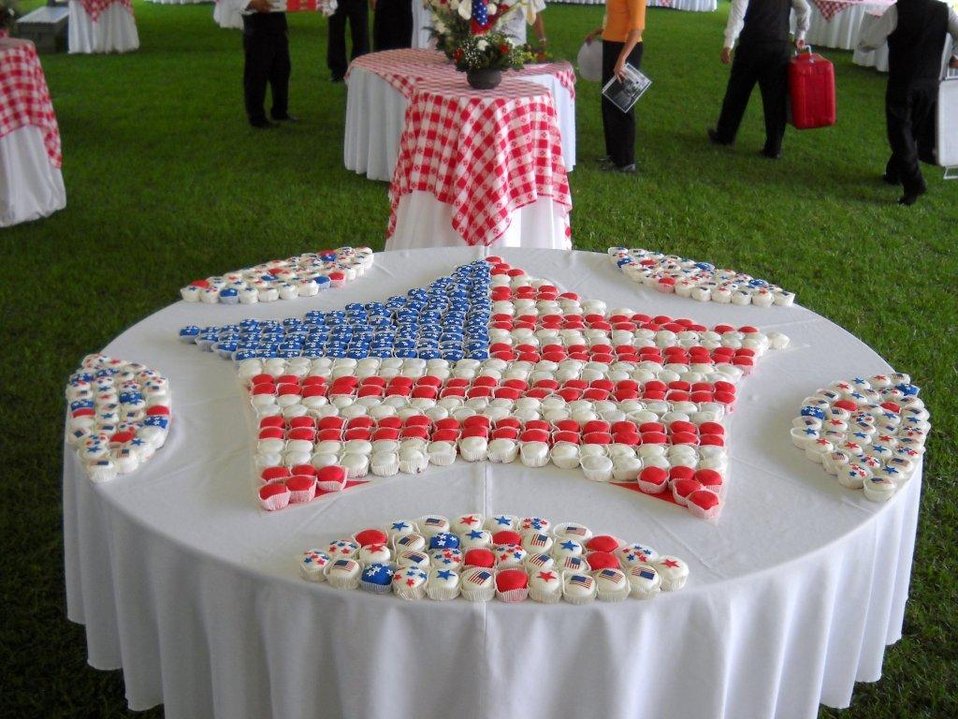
July 4th Celebration at U.S. Embassy in Guatemala

Cupcakes are decorated red, white, and blue for the U.S. Independence Day celebration at the Ambassador’s Residence in Guatemala City, Guatemala, on July 2, 2010.